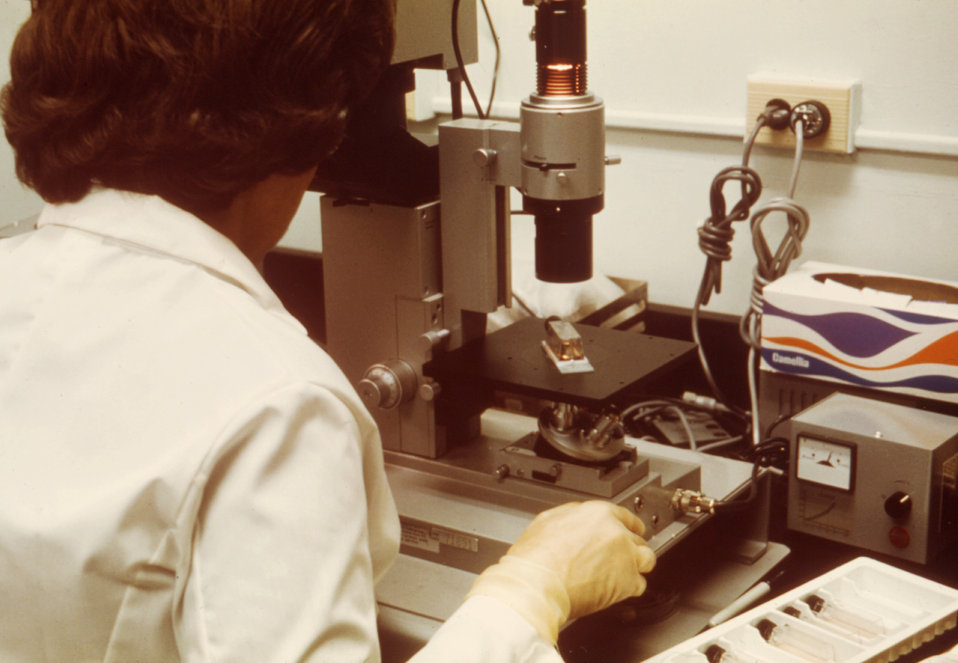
This lab technician is checking the cell growth rates of amniotic fluid cell cultures.